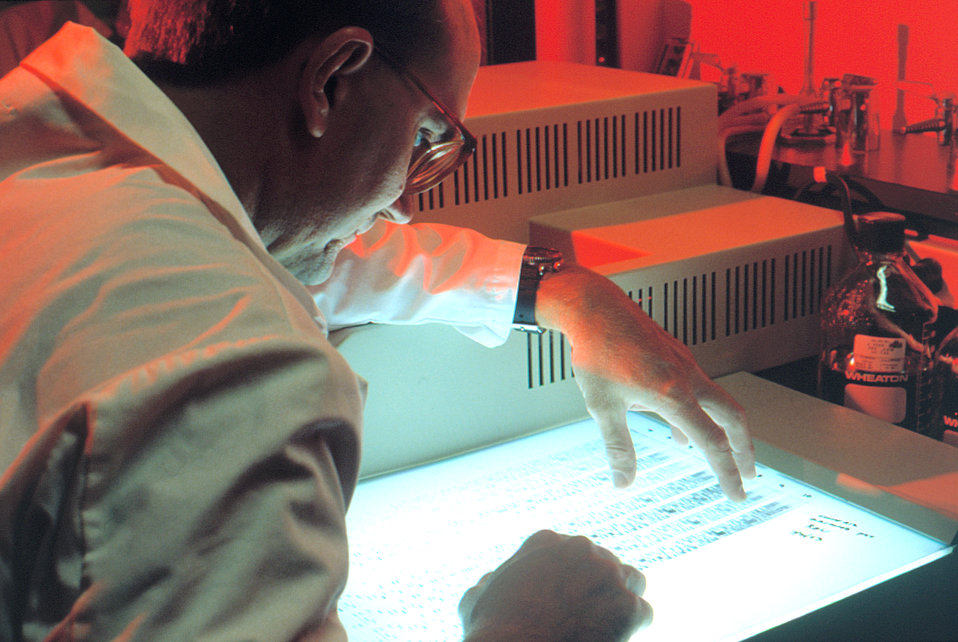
Laboratory worker reviewing DNA band pattern.